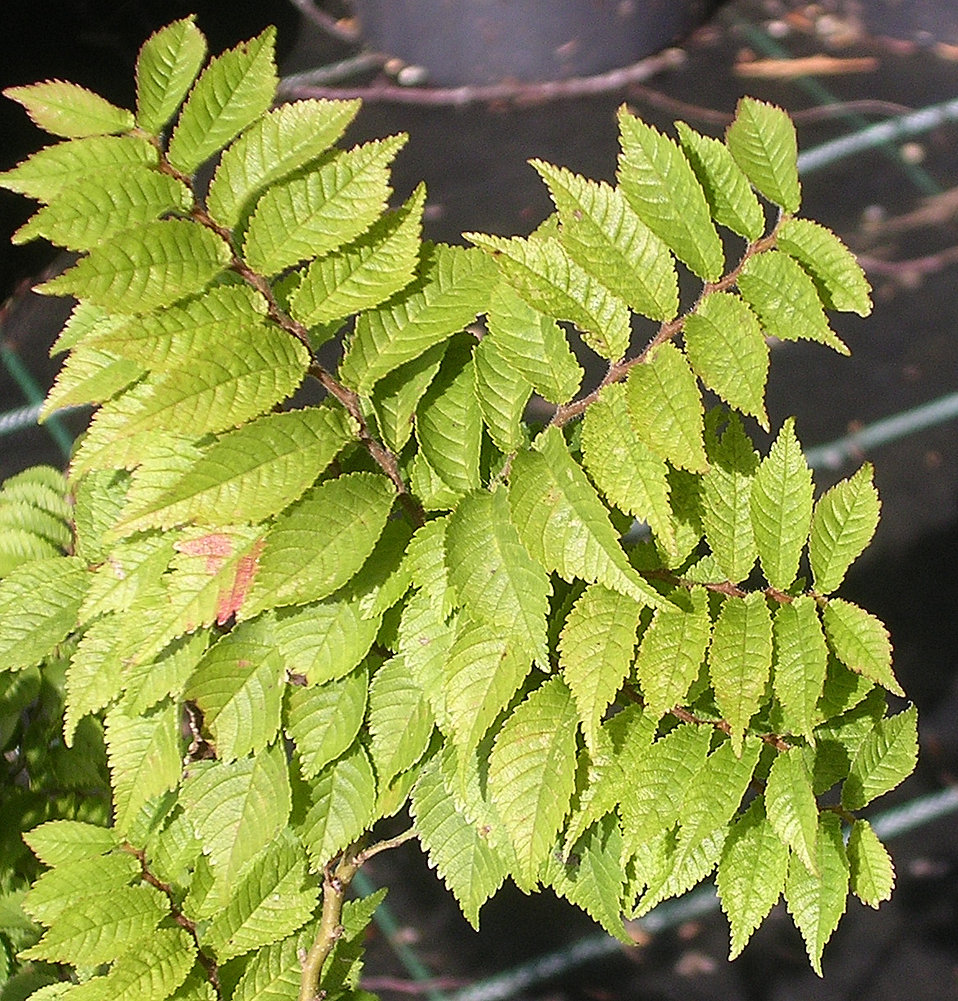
Ulmus 'Jacqueline Hillier' foliage